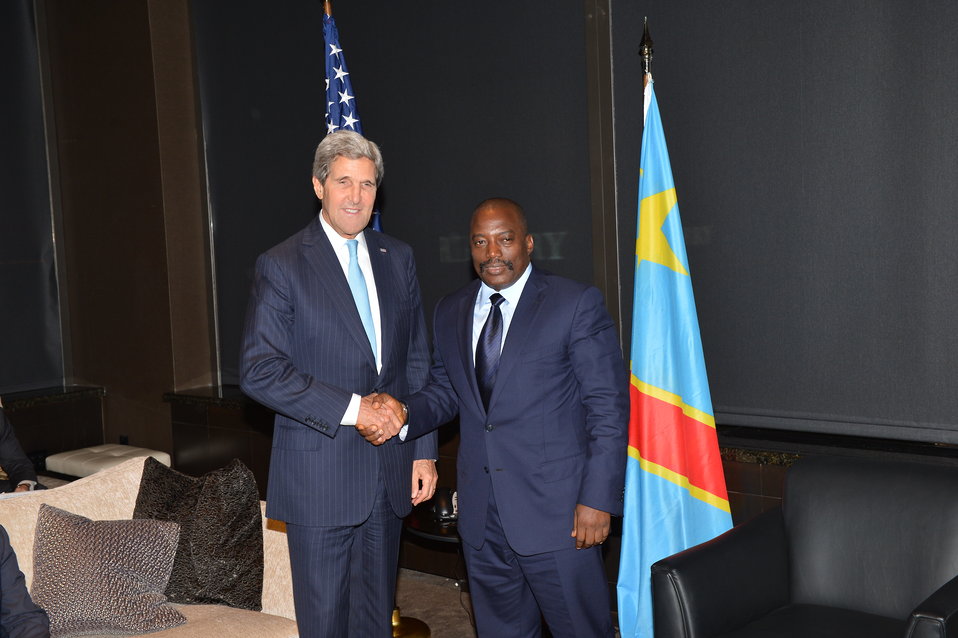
Secretary Kerry Meets With DRC President Kabila

U.S. Secretary of State John Kerry holds a bilateral meeting with the President of the Democratic Republic of Congo Joseph Kabila in New York City on September 24, 2013.